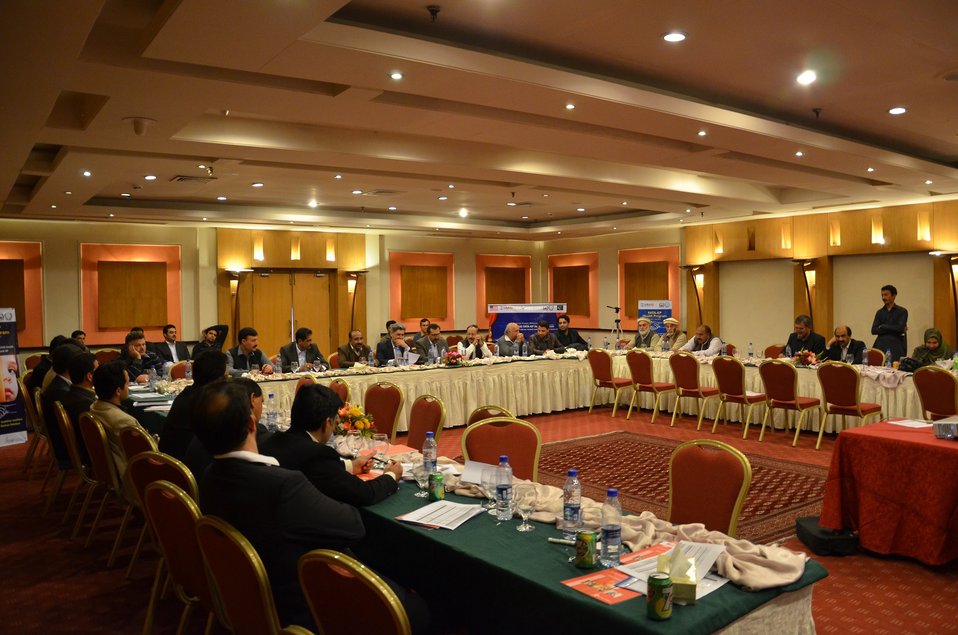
Strategic planning workshop with KP health department held on 6th Feb 2013 at PC Peshawar

Work plan for each year is developed in consultation with health authorities of KP and FATA. For this purpose a consultative workshop is arranged each year.